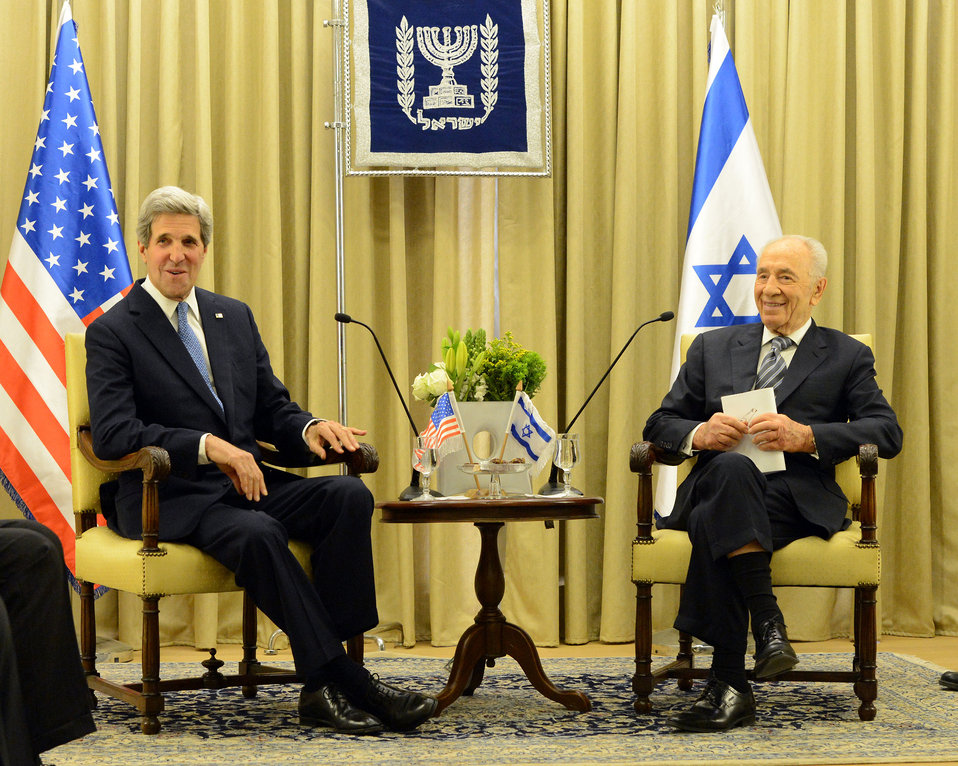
Secretary Kerry Meets With Israeli President Peres

U.S. Secretary of State John Kerry meets with Israeli President Shimon Peres in Jerusalem on April 8, 2013.